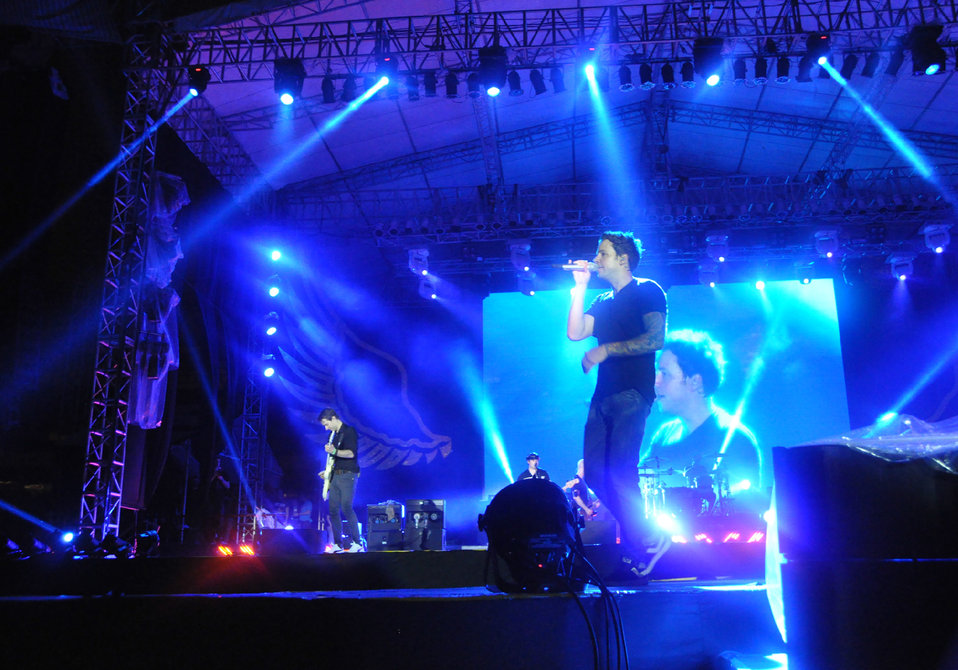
Simple Plan Performs in Hanoi, Vietnam, with message to stop human trafficking now

MTV EXIT concert co-sponsored by USAID.